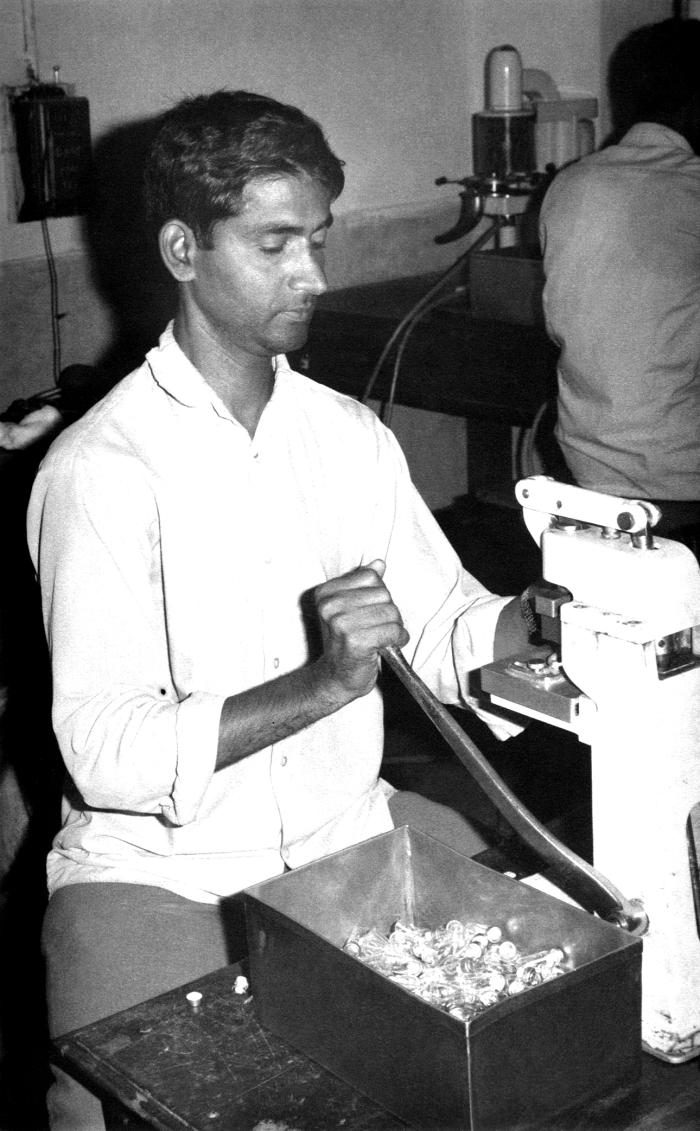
This image depicted a technician in a Bangladesh laboratory who was in the process of capping multidose vials containing smallpox vaccine. It was taken by Dr. Stan Foster, EIS, Officer, Class of 1962, while he was part of the worldwide Global Smallpox Eradication Campaign of the late 1960s, early 1970s.